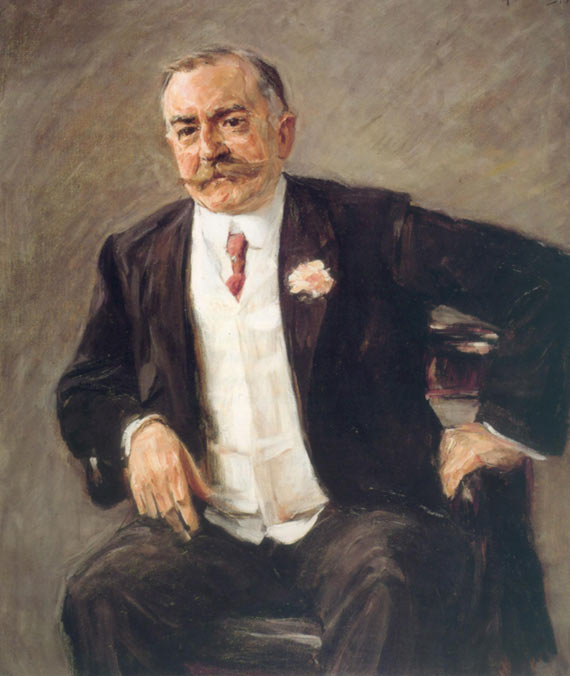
Carl duisberg